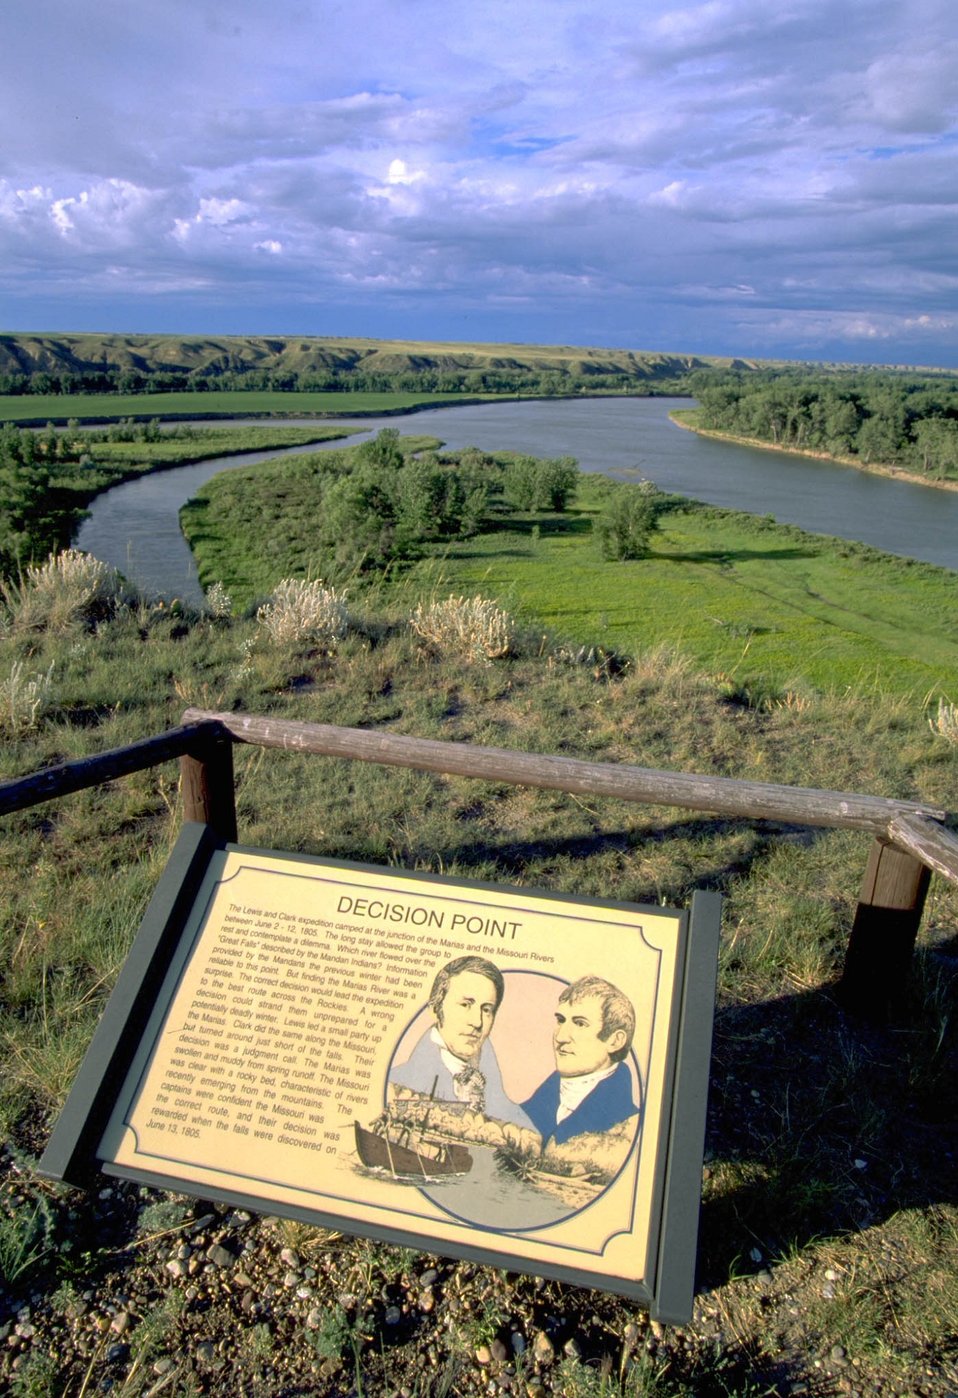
Decision Point-the confluence of the Missouri and Marias Rivers-with interpretive sign